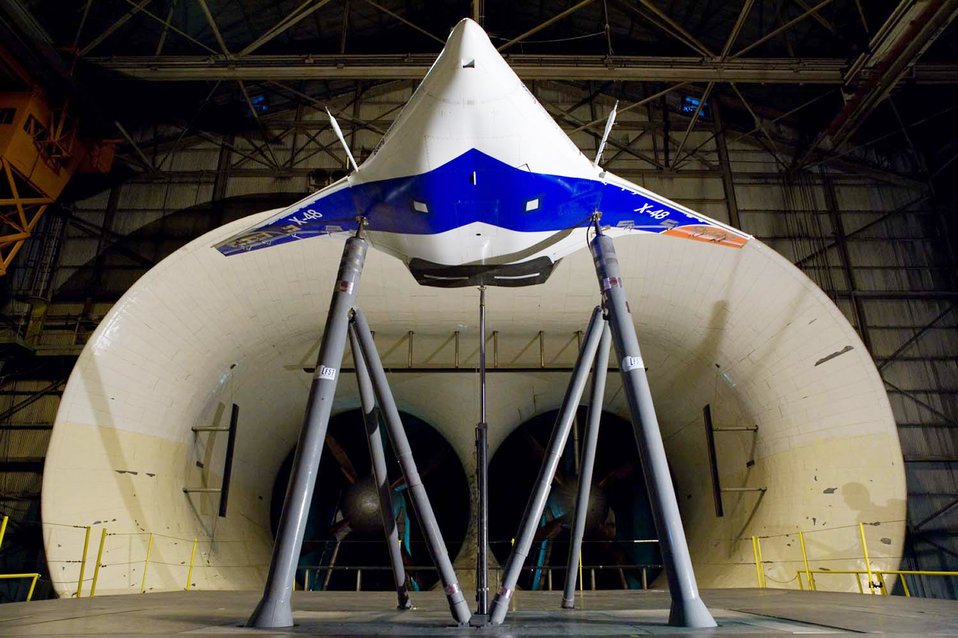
Blowing in the wind

An X-48C experimental aircraft is mounted in a full-scale wind tunnel Aug. 31, 2009, near Langley Air Force Base, Va. Old Dominion University scientists operate the tunnel which provides a controlled test environment to measure aerodynamic forces on vehicles.